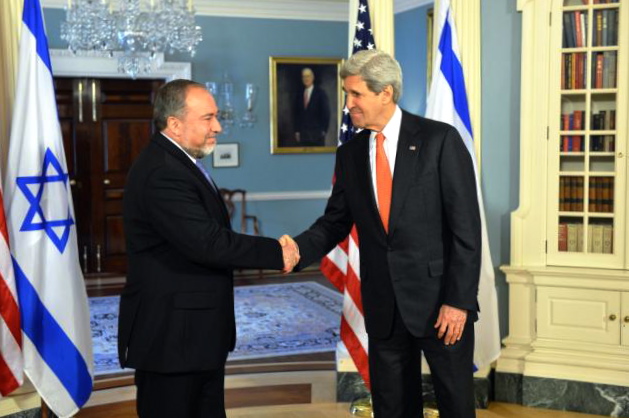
Secretary Kerry Shakes Hands With Israeli Foreign Minister Lieberman

U.S. Secretary of State John Kerry and Israeli Foreign Minister Avigdor Lieberman shake hands before their bilateral meeting at the U.S. Department of State in Washington, D.C., on April 9, 2014.